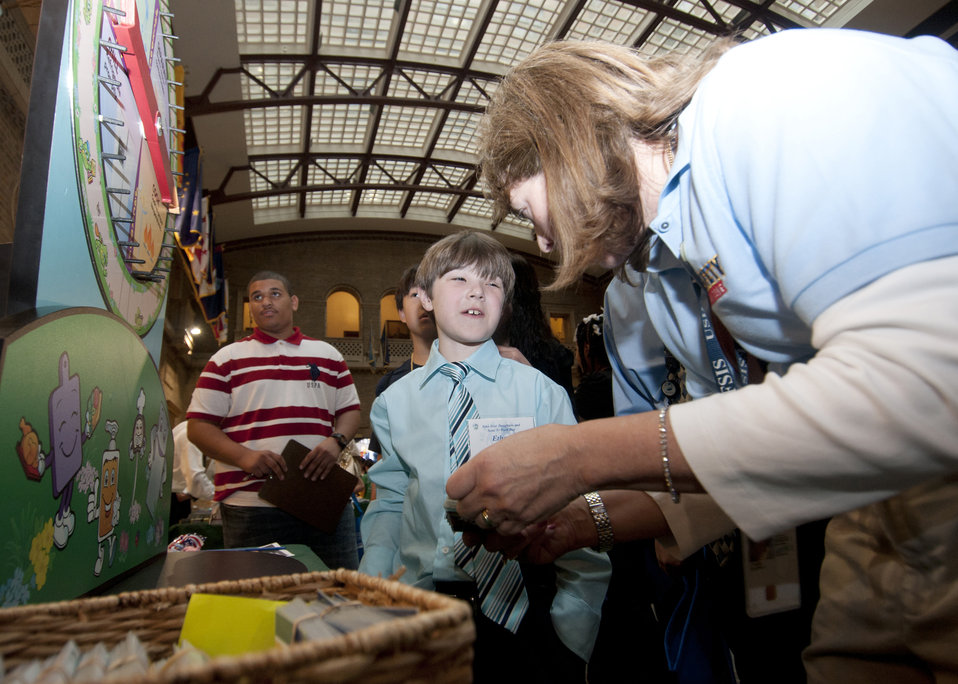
The U. S. Department of Agriculture (USDA) held its annual “Take Your Child to Work Day” on the patio of the Whitten Building, Washington, DC, on Thursday, April 28, 2011. The program is designed to introduce young people to USDA’s wide range of responsibilities and services. Ethan Corbett listens to a Food Safety Inspection employee as she explains about safe food handling.